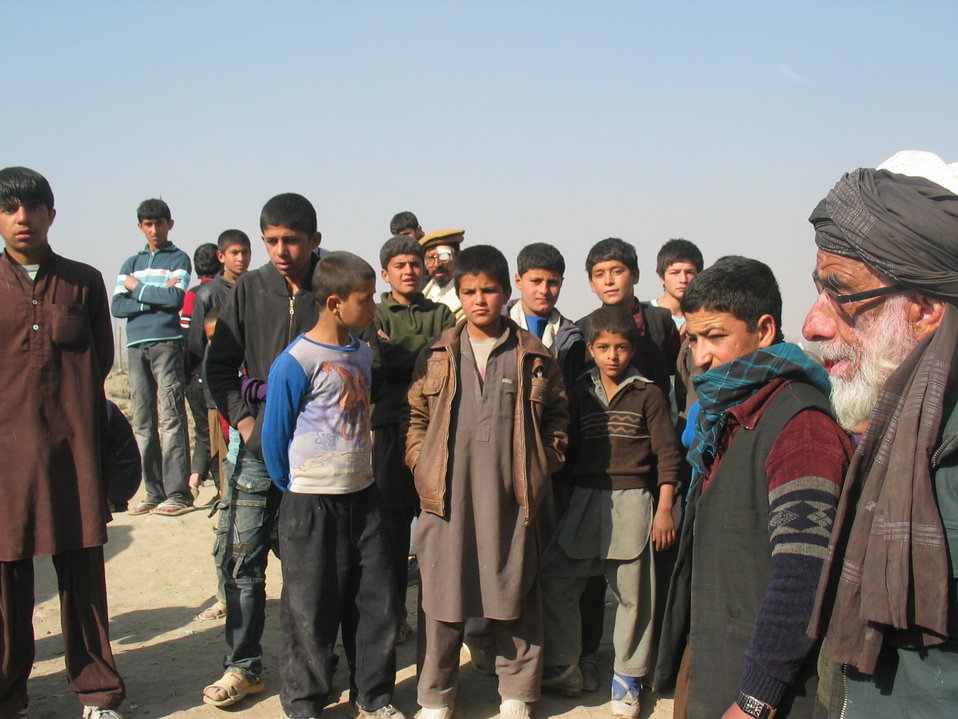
Kabul River Bridge Renovation, December 3, 2010